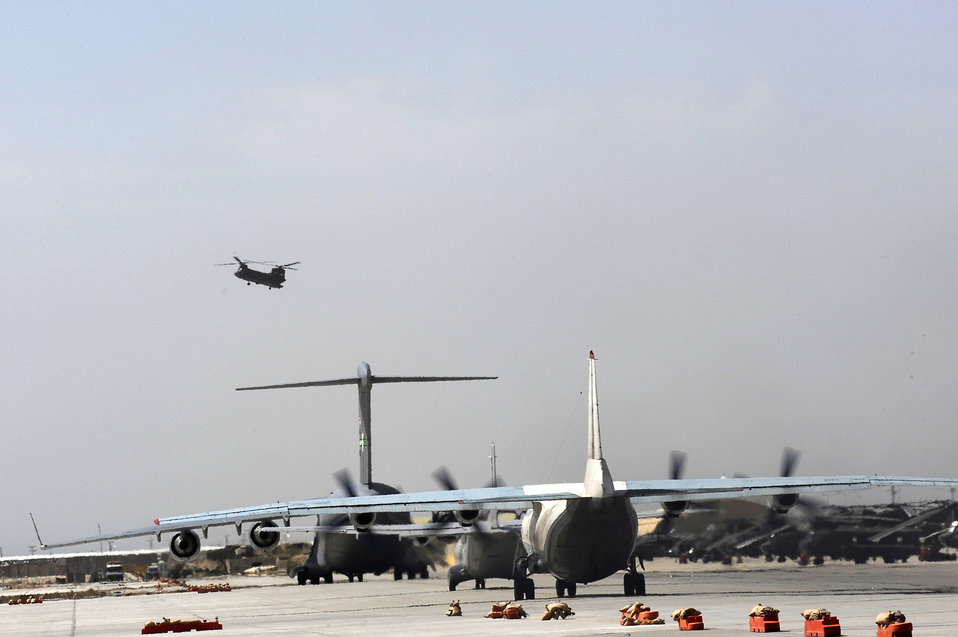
Bagram Airmen provide support

Aircraft wait to take off at Bagram Airfield, Afghanistan, April 6, 2010. The 455th Air Expeditionary Wing provides expeditionary combat and combat support to U.S. and coalition forces.